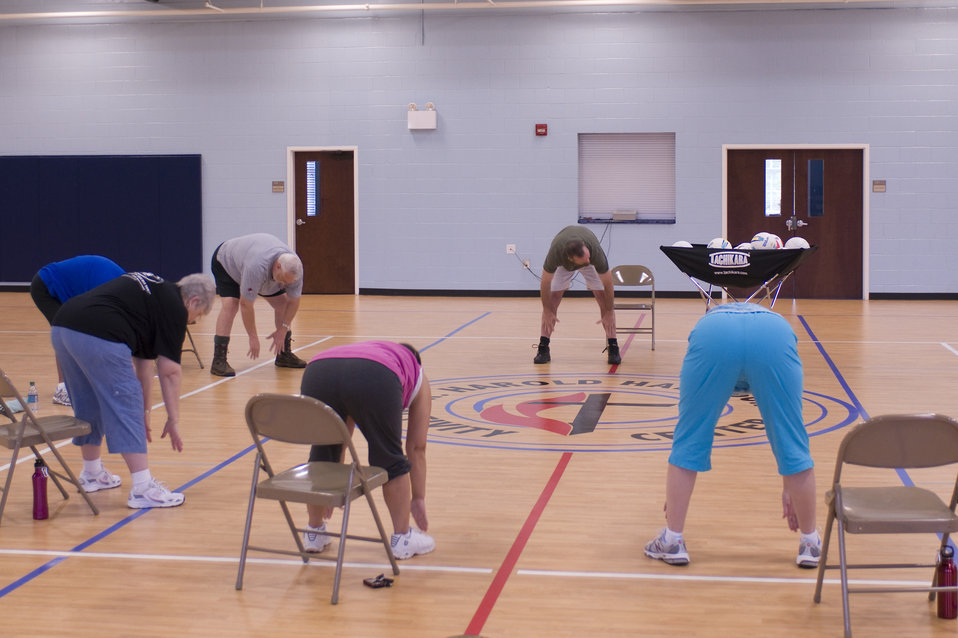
The older individuals pictured here on the wooden floor of an indoor basketball court, were participating in an exercise class consisting of stretching, and aerobic repetitive motion movements. In this particular view, the group members were stretching their torso and hamstring muscles by bending forward at the waist, while keeping their legs straight at the knees.